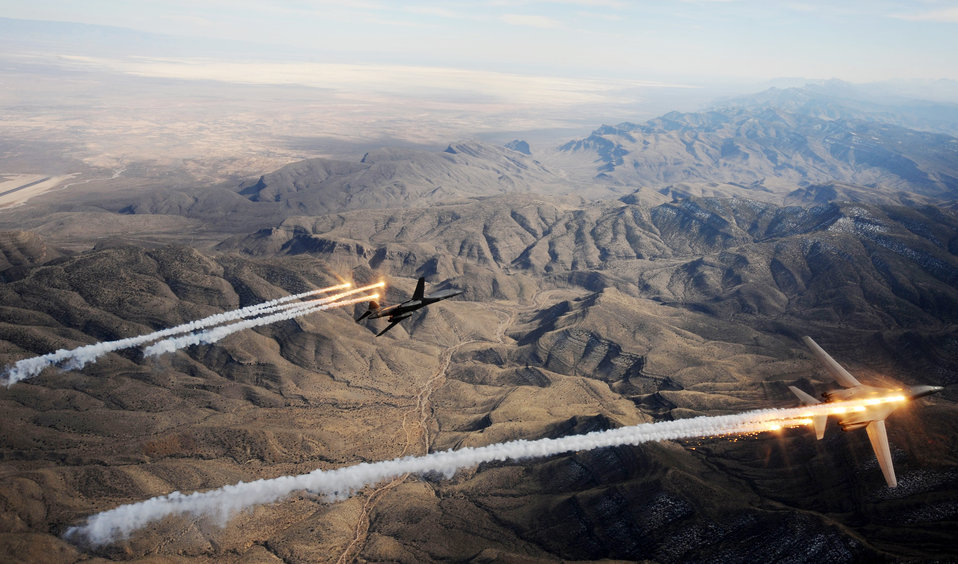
B1-B Training Mission

A two-ship formation of B-1B Lancers assigned to the 28th Bomb Squadron, Dyess Air Force Base, Texas, release chaff and flares while maneuvering over New Mexico during a training mission Feb. 24, 2010. Dyess celebrates the 25th anniversary of the first B-1B bomber arriving at the base.